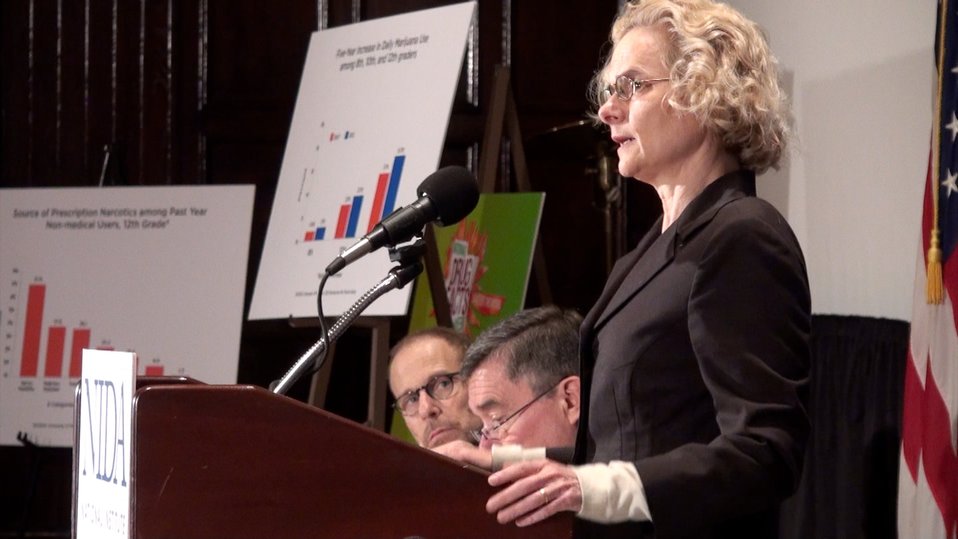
Dr. Nora Volkow, NIDA Director